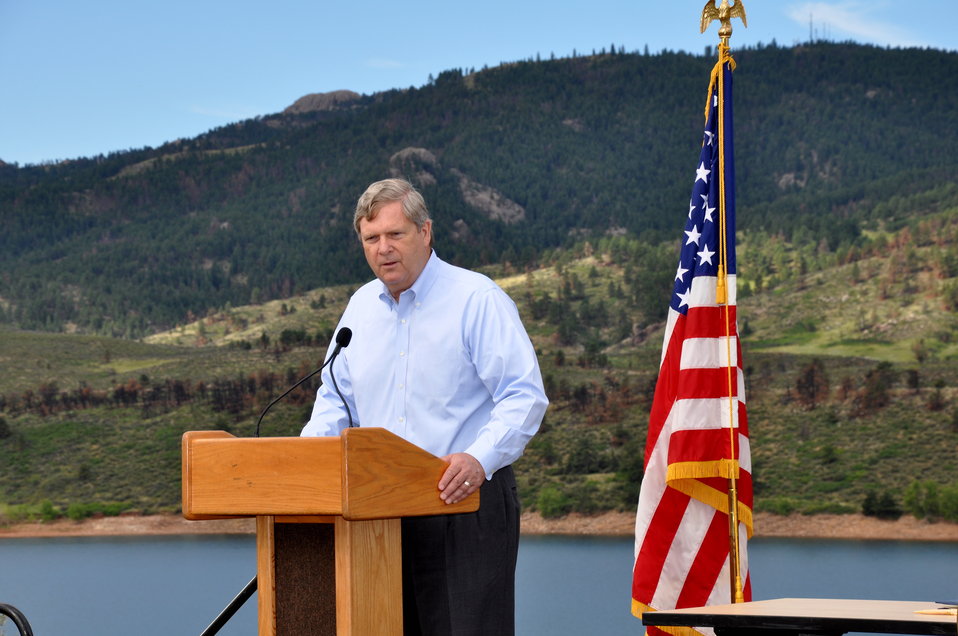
Agriculture Secretary Tom Vilsack speaks at the Memorandum of Understanding (MOU) signing held at the Horsetooth Reservoir in Fort Collins, CO on Jul. 19, 2013. This MOU will facilitate activities such as wildfire risk reduction through forest thinning, prescribed fire and other forest health treatments; minimizing post-wildfire erosion and sedimentation; and restoring areas that are currently recovering from past wildfires through tree planting and other habitat improvements.